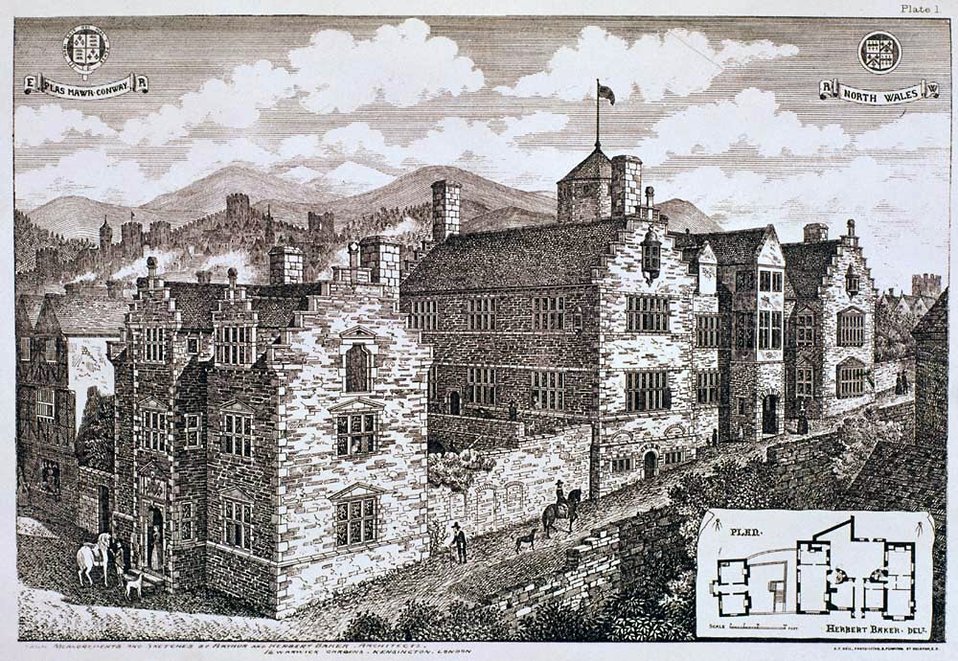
Plas Mawr Conwy Wales